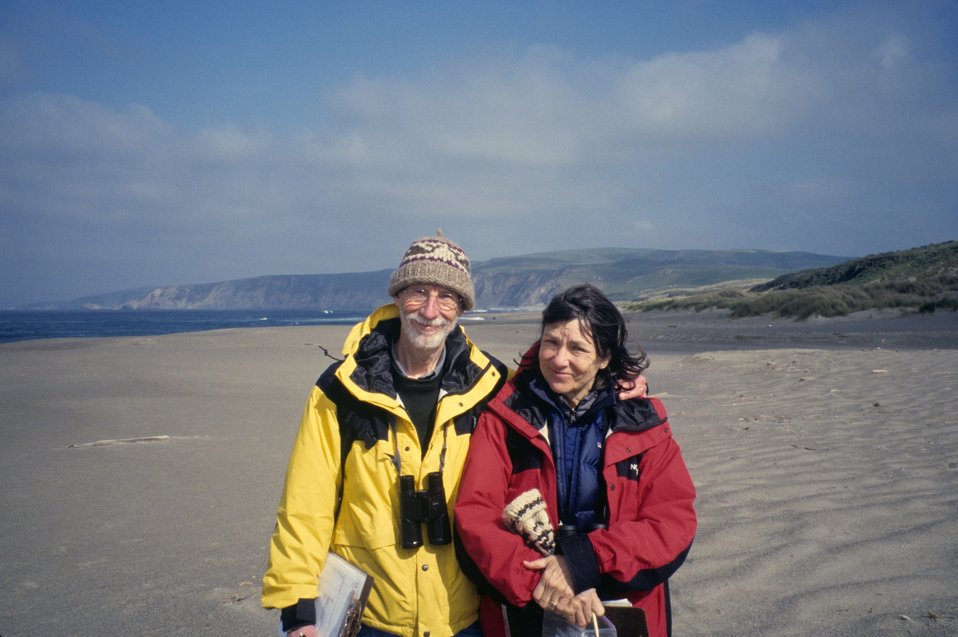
Point Reyes Great Beach. Beach Watch volunteers.